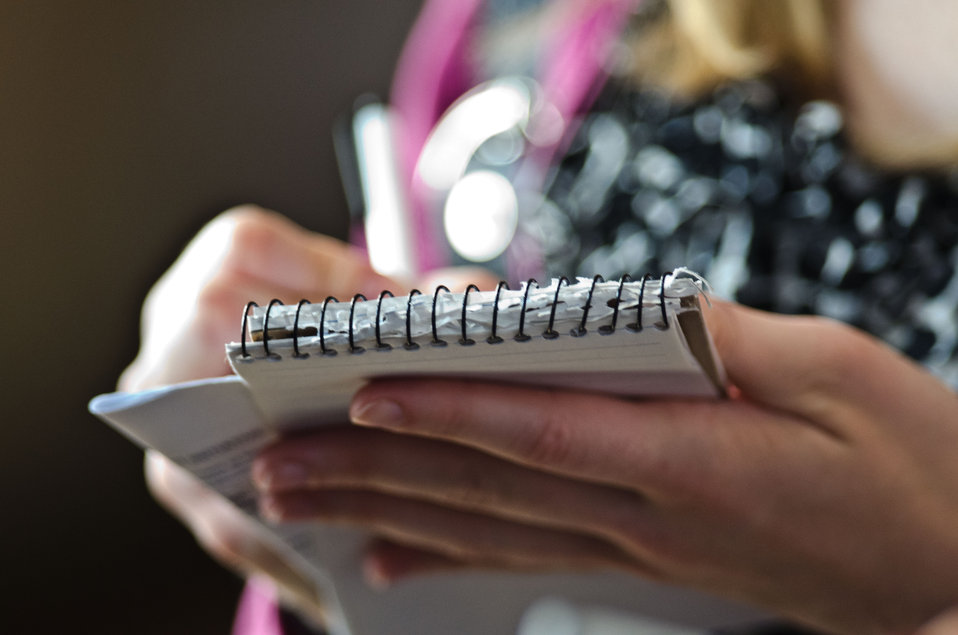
Agriculture Secretary Tom Vilsack meets with members of the press after speaking at the National Export Initiative (NEI) Small Business Tour in Milwaukee, WI, on Wednesday, August 3, 2011. An important goal of the NEI is to provide additional assistance to small and medium-sized businesses, which are major drivers of job creation. The NEI is assisting small and medium-sized businesses win more foreign government contracts, find buyers worldwide, participate in more trade missions and trade shows, receive more export financing, and learn new ways to sell products and services overseas.